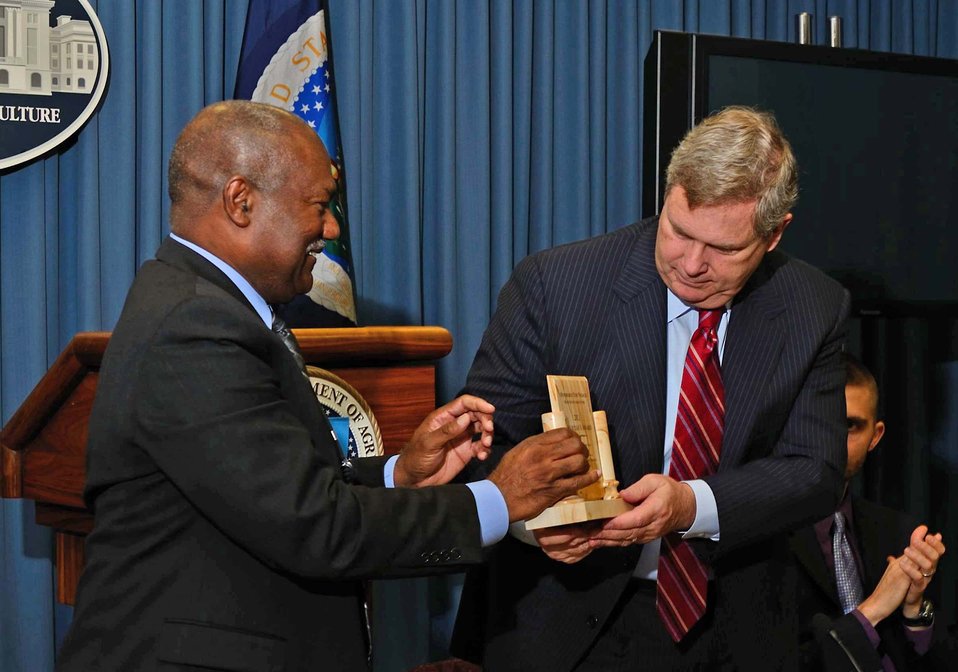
Agriculture Secretary Tom Vilsack receives the 2011 Chairman’s Award for vision, dedication and focus on the matters that the President’s Board of Advisors on Historically Black Colleges and Universities is charged to advance, during a meeting at the U.S. Department of Agriculture, in Washington, D.C. on Wednesday, October 19, 2011.